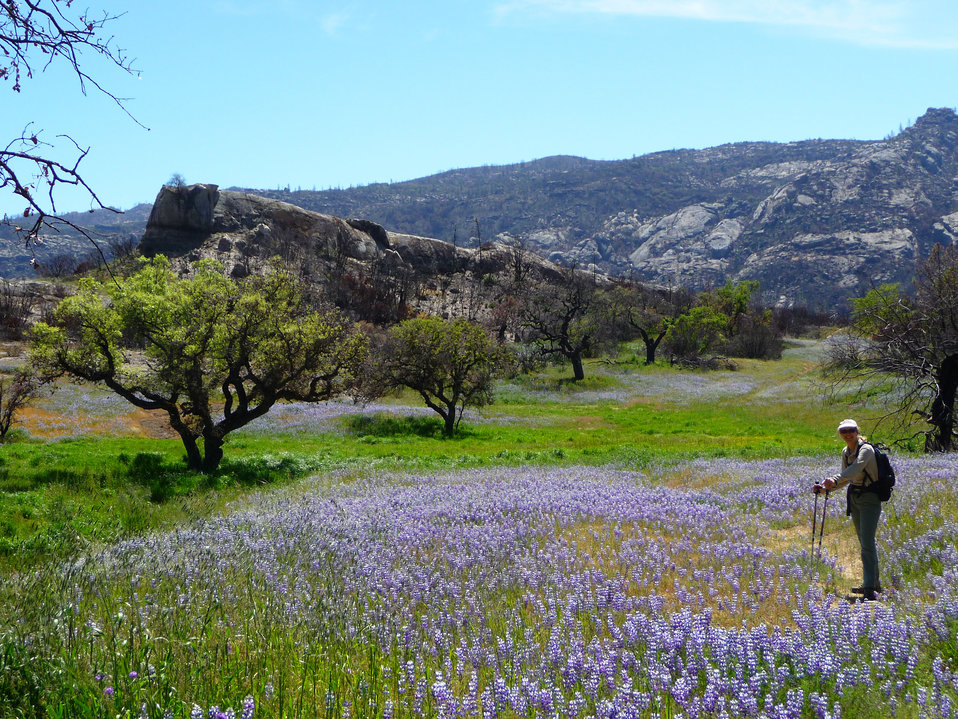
Hiker on Santa Lucia Trail Ventana Wilderness (post fire 2008), in California on April 16, 2009.